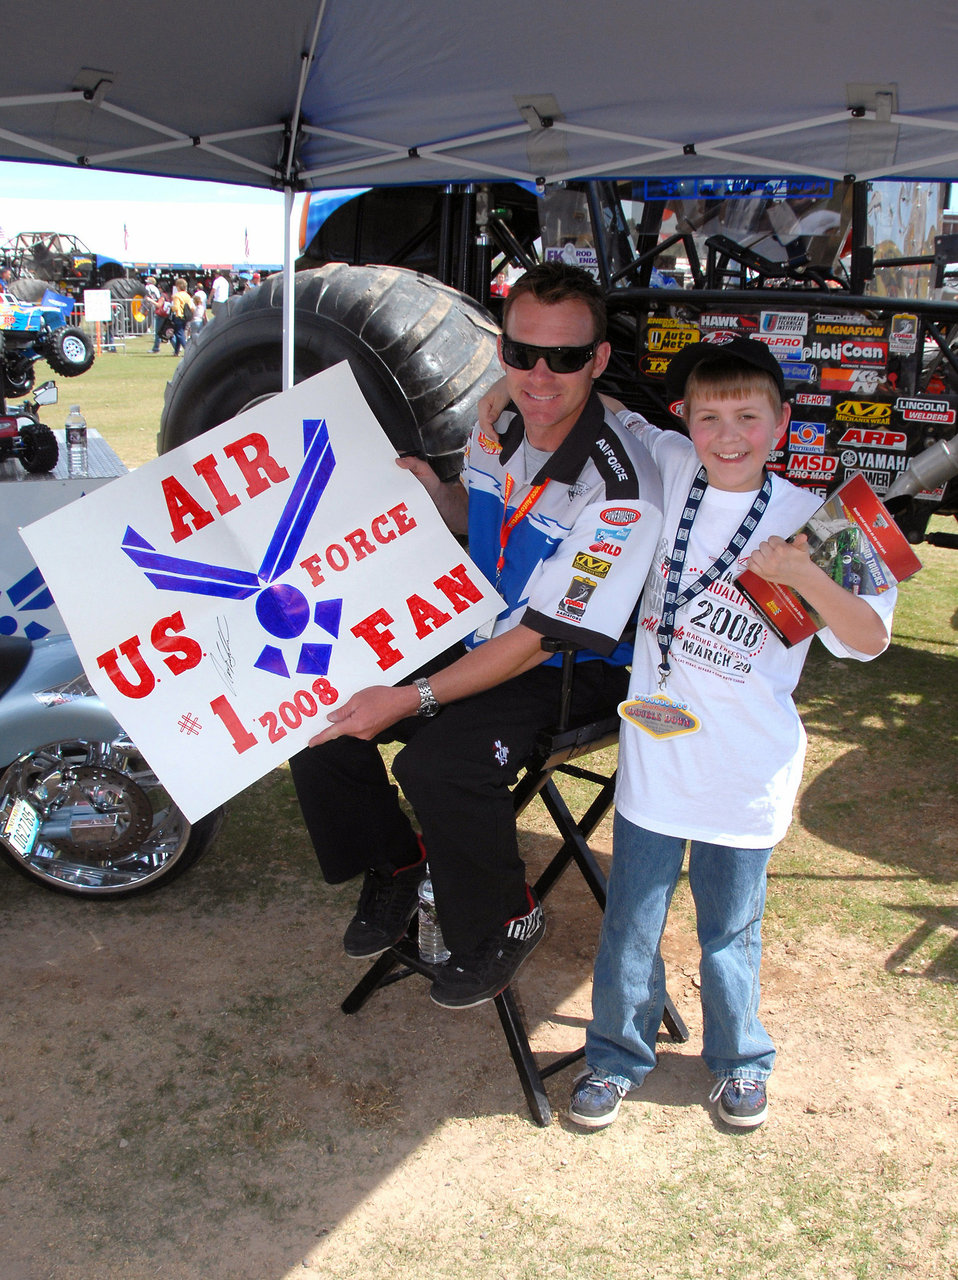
Air Force monster truck wows Las Vegas crowd

Damon Bradshaw greets a fan during an autograph session at the Monster Jam World Finals March 29 in Las Vegas. Nellis Air Force Base, Nev., provided an honor guard and a 50-Airmen formation carrying state flags at the event. Mr. Bradshaw is the driver of the Air Force Afterburner monster truck.